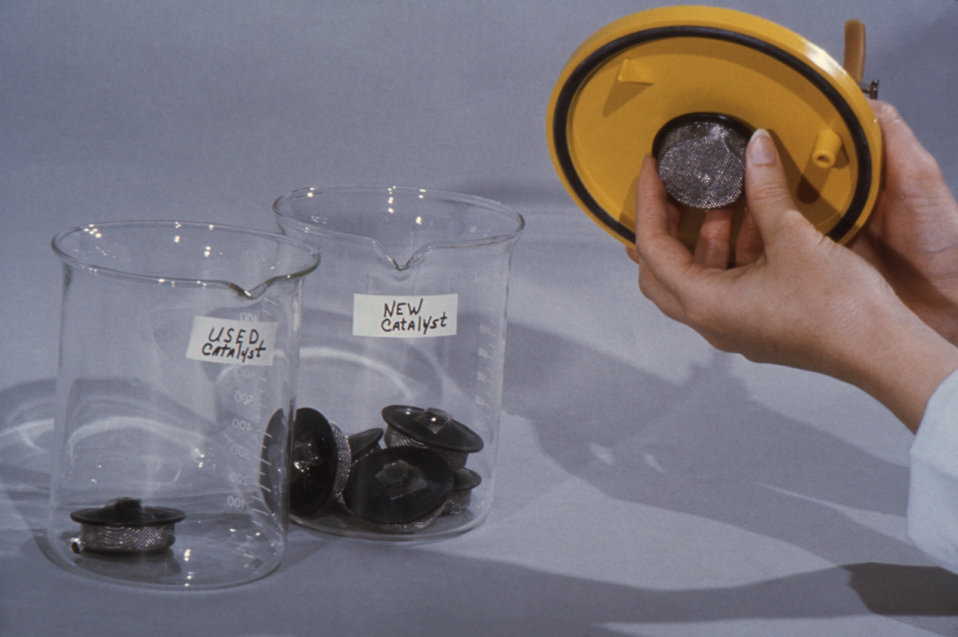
Note the lid of this yellow gas-pak jar outfitted with a catalyst screen, and 2 beakers labeled 'New' and 'Used' catalyst.